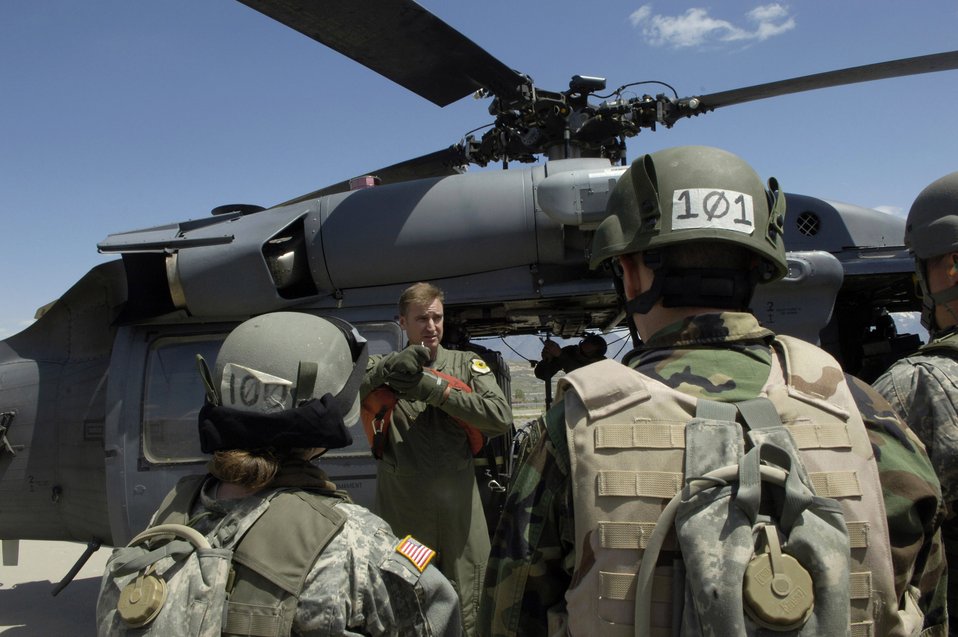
Search and rescue training

Master Sgt. Michael Harkins demonstrates proper hoist procedures to Army Special Forces members May 3 during a combat search and rescue integration exercise over Sandy, Utah. The objective of the exercise was to expand expertise and integration with Utah's 211th Aviation Group AH-64 Apache Joint Rotary Wing, 4th Fighter Squadron F-16 Fighting Falcon Striker assets, special operations forces and conduct extensive joint CSAR operations against surface-to-air threats. Sergeant Harkins is a flight engineer with the 34th Weapons Squadron at Nellis Air Force Base, Nev.